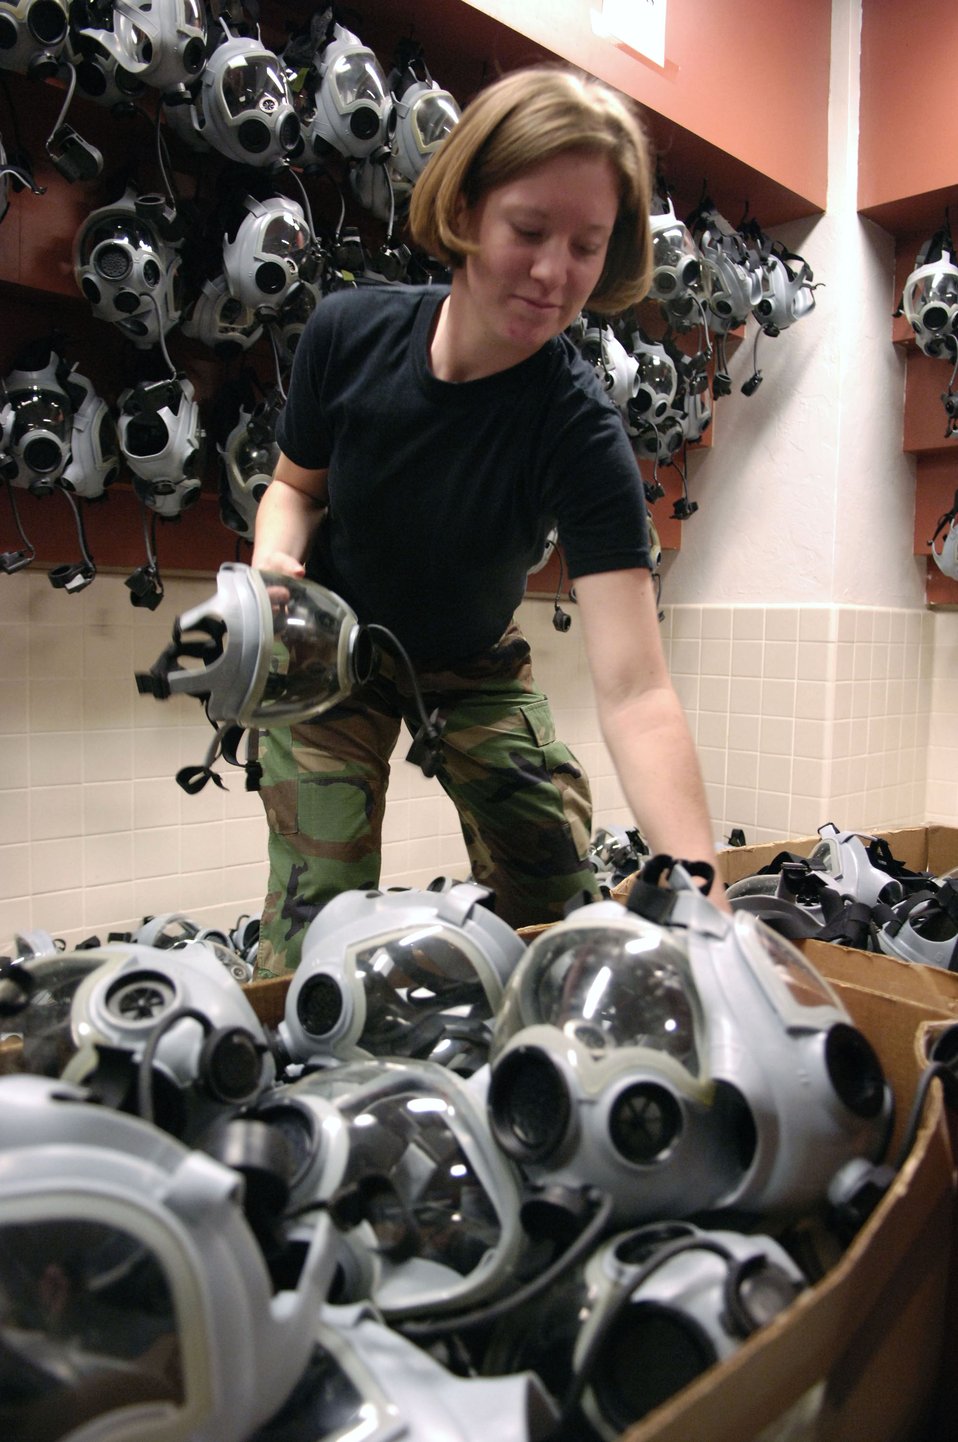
Supporting Bushwhacker

Airman Stephanie Walton prepares to hang up a gas mask to dry Jan. 20 during Phase 1 of Exercise Bushwacker 07-02 at Davis-Monthan Air Force Base, Ariz. Bushwacker 07-02 is an operational readiness exercise that tests the wing's deployment abilities. Airman Walton is assigned to the 355th Logistics Readiness Squadron.